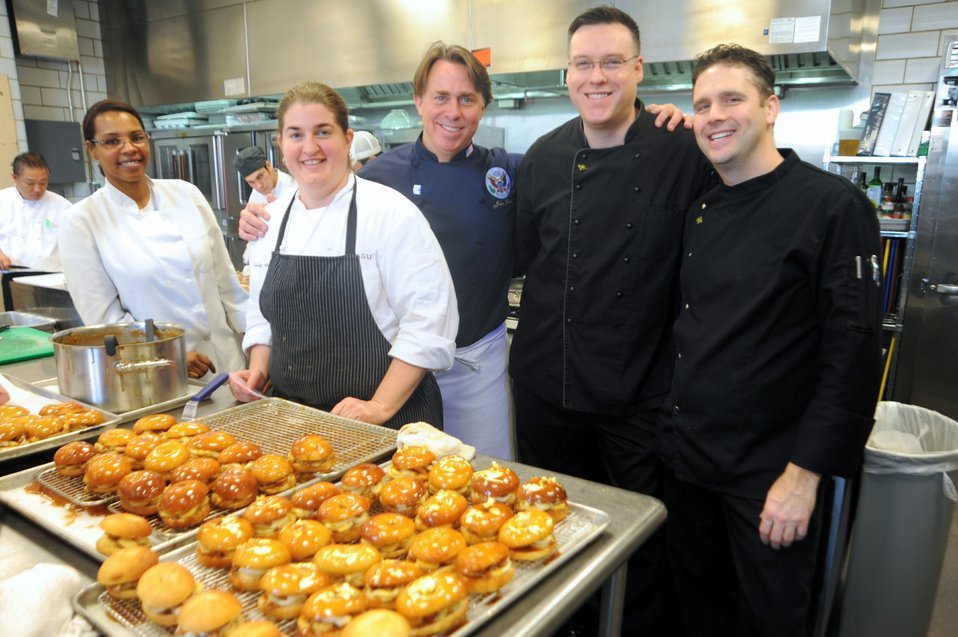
New Orleans Chef Besh Prepares State Department Luncheon for French President Hollande

New Orleans chef John Besh, joined by a pair of catering assistants and State Department chefs Jason Larkin and Chris James, stands before a rack of Salted Caramel King Cakes he was serving as part of the luncheon he prepared for French President Francois Hollande, Vice President Joe Biden, and Secretary of State John Kerry at the Department of State on February 11, 2014.